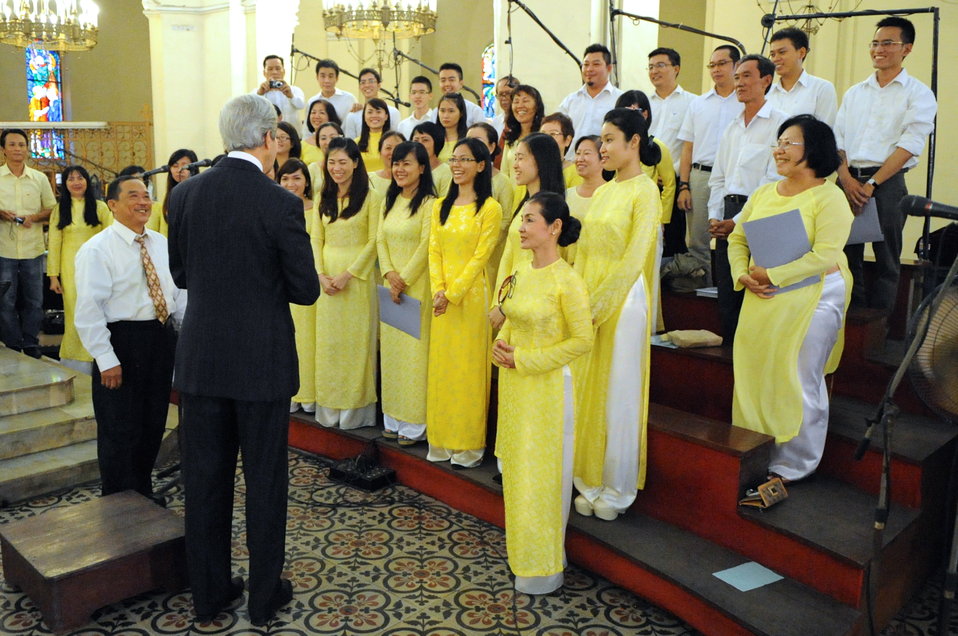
Secretary Kerry Thanks the Choir at the Notre Dame Cathedral in Vietnam

U.S. Secretary of State John Kerry thanks the choir at the Notre Dame Cathedral after they sang at a Mass he attended in Ho Chi Minh City, Vietnam, on December 14, 2013.